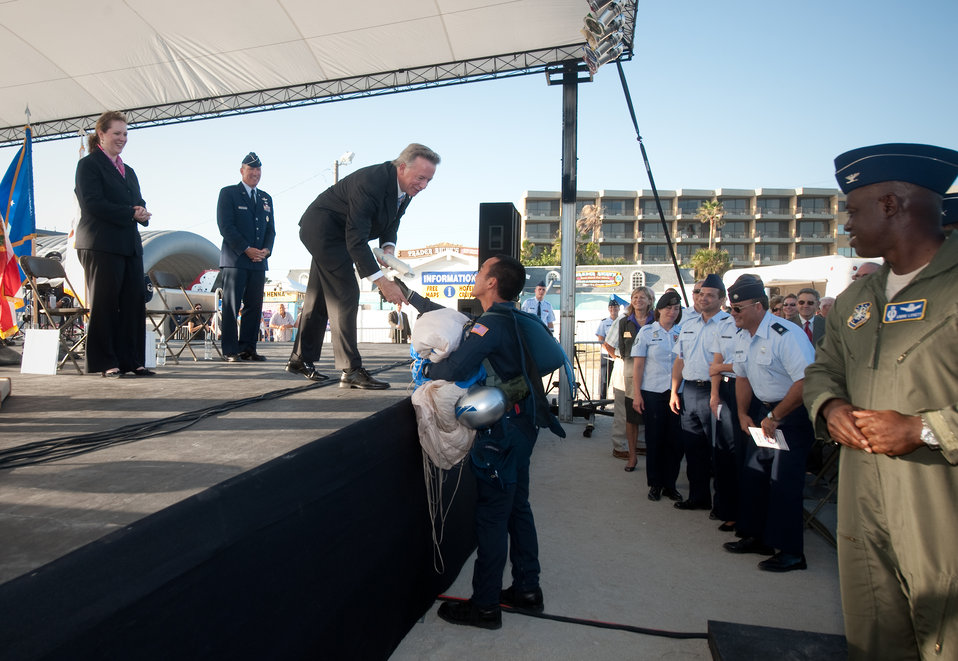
Air Force Week Cocoa Beach Launch

Air Force Academy Cadet Alexander Choi delivers the official proclamation certificate to Florida Lt. Governor Jeffrey Kottkamp to begin the Air Force Week Cocoa Beach proclamation ceremony Oct. 26, 2010. Cadet Choi, a member of the Academy’s Wings of Blue parachute team jumped from a C-130 Hercules and landed on the Cocoa Beach, Fla., waterfront to deliver the certificate. The proclamation ceremony was officiated by Mr. Kottkamp and Undersecretary of the Air Force Erin C. Conaton. Air Force Week Cocoa Beach runs through Oct. 31.